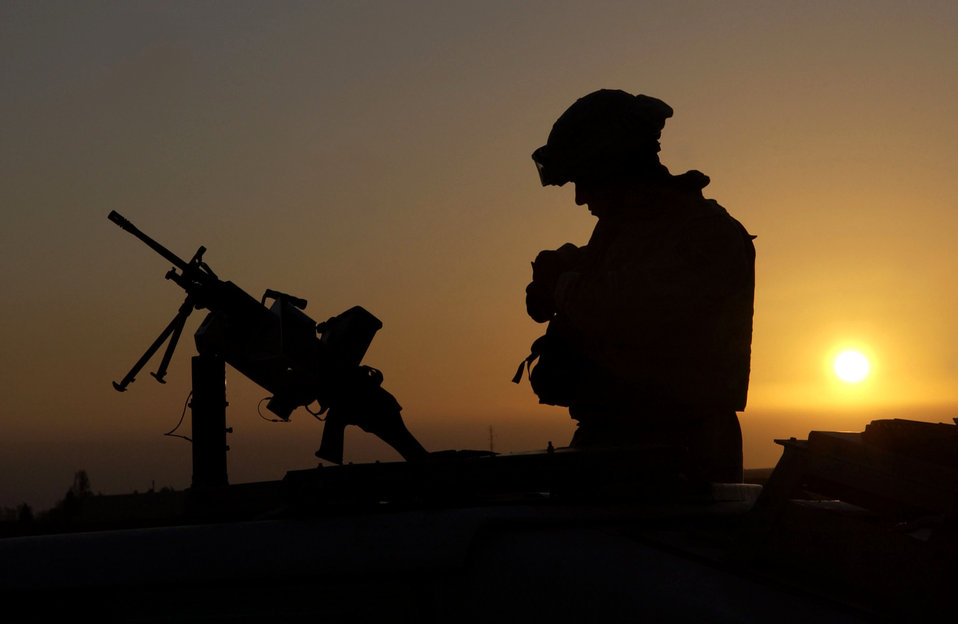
Ready and waiting

Senior Airman Chris Cabibi checks his gear before going on patrol March 2 at Kirkuk Air Base, Iraq. Airman Cabibi provides an armed response capability to limit, counteract, and neutralize hostile action directed against the installation. He is with the 506th Expeditionary Security Forces Squadron.